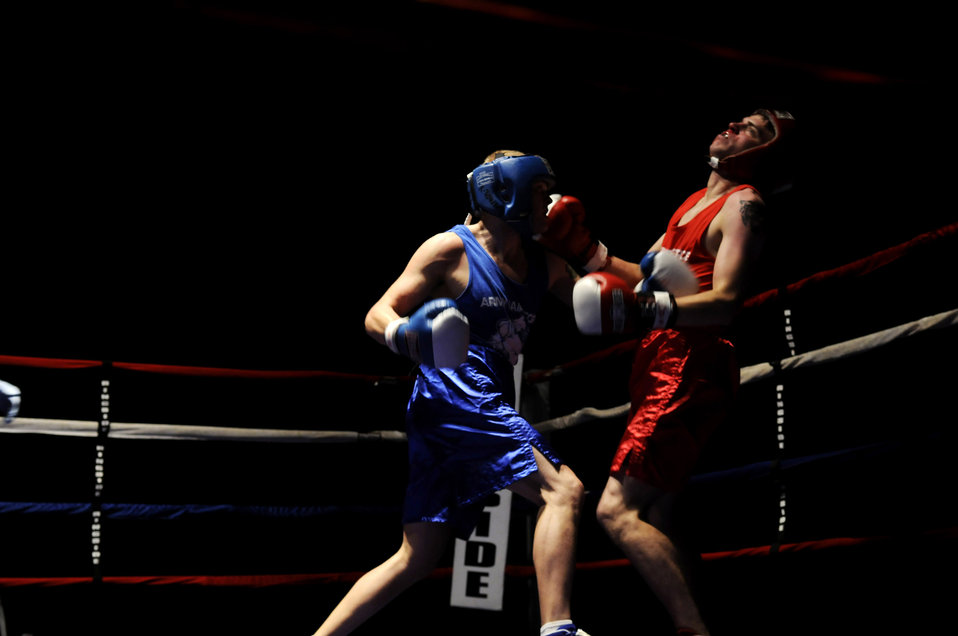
A resounding left hook

2nd Lt. Phil Menagh (left), 435th Aerospace Medical Squadron, Ramstein Air Base, Germany, lands a punch on Airman 1st Class Matthew Tubbs, 21st Operations Weather Squadron, Sembach Annex, Germany, in a match at nearby Vogelweh Air Base. Menagh defeated Tubbs.